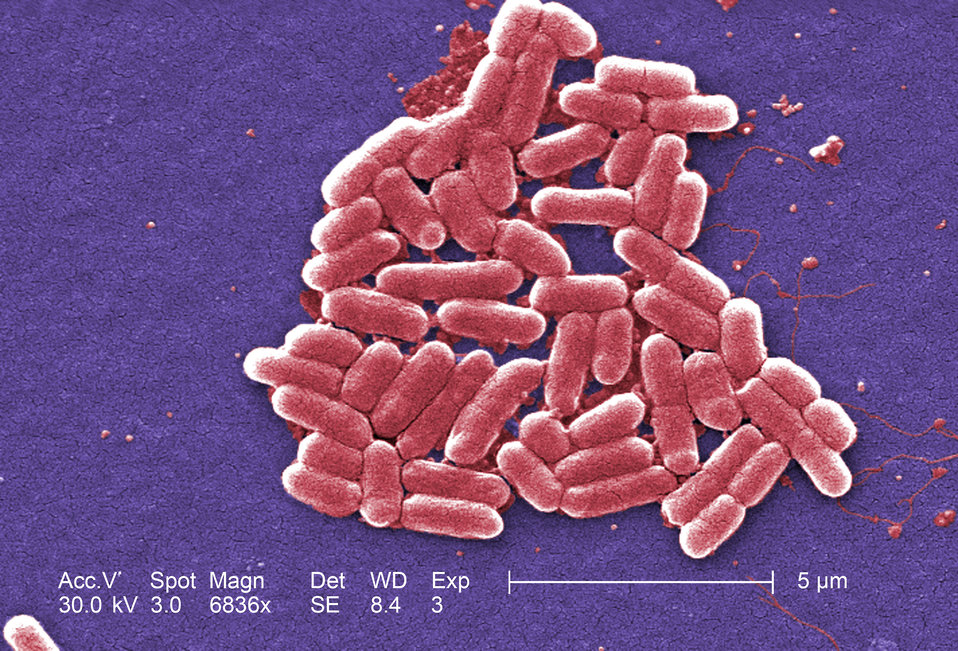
Under a magnification of 6836x, this colorized scanning electron micrograph (SEM) depicted a number of Gram-negative Escherichia coli bacteria of the strain O157:H7, which is one of hundreds of strains of this bacterium. Although most strains are harmless, and live in the intestines of healthy humans and animals, this strain produces a powerful toxin, which can cause severe illness.E. coli O157:H7 was first recognized as a cause of illness in 1982 during an outbreak of severe bloody diarrhea; the outbreak was traced to contaminated hamburgers. Since then, most infections have come from eating undercooked ground beef.The combination of letters and numbers in the name of the bacterium refers to the specific markers found on its surface, which distinguishes it from other types of E. coli. See PHIL 8800 for a black and white version of this image.